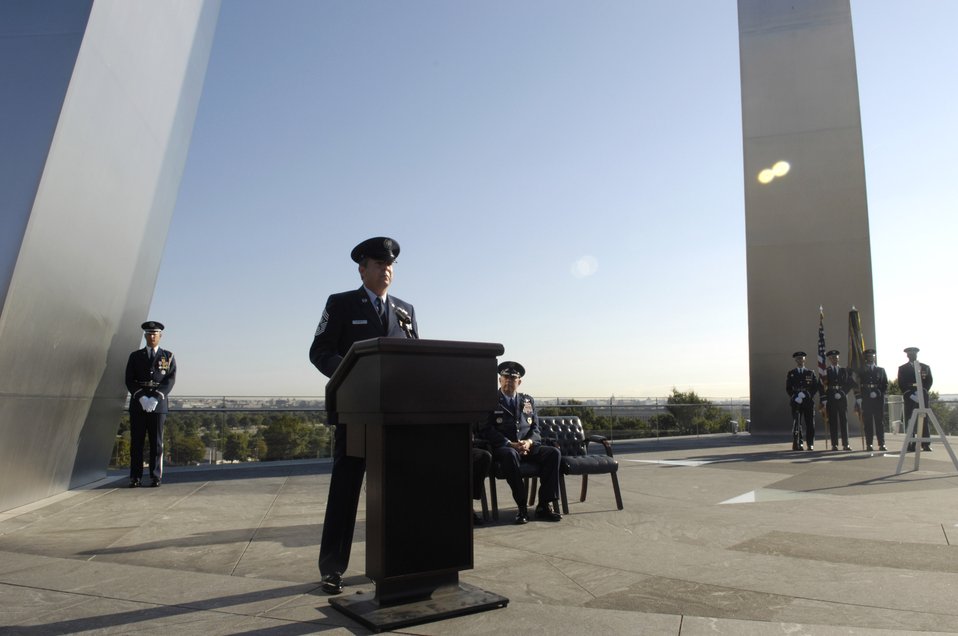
Air Force leaders gather at memorial for anniversary

Chief Master Sgt. of the Air Force Rodney J. McKinley speaks at Air Force Memorial during a wreath-laying ceremony there Sept. 18 in honor of the 60th anniversary of the Air Force.